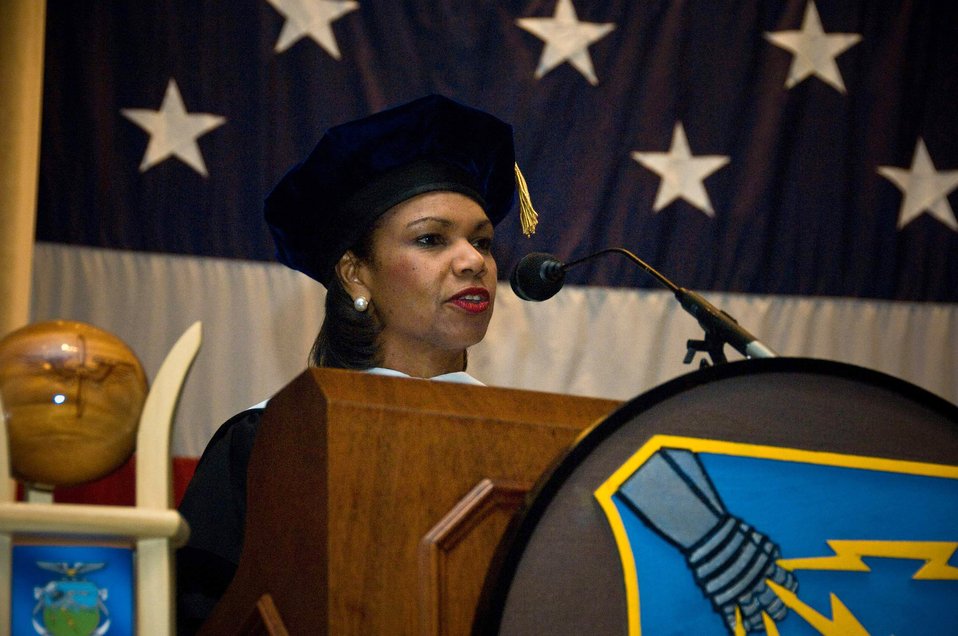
Secretary of state receives honorary Air University degree

Secretary of State Condoleezza Rice speaks to Air University's board of visitors, commanders, faculty and students after receiving an honorary Doctor of Letters degree from university officials April 14 at Maxwell Air Force Base, Ala. Air University bestowed the honor for her academic achievements and contributions to international relations and national security.